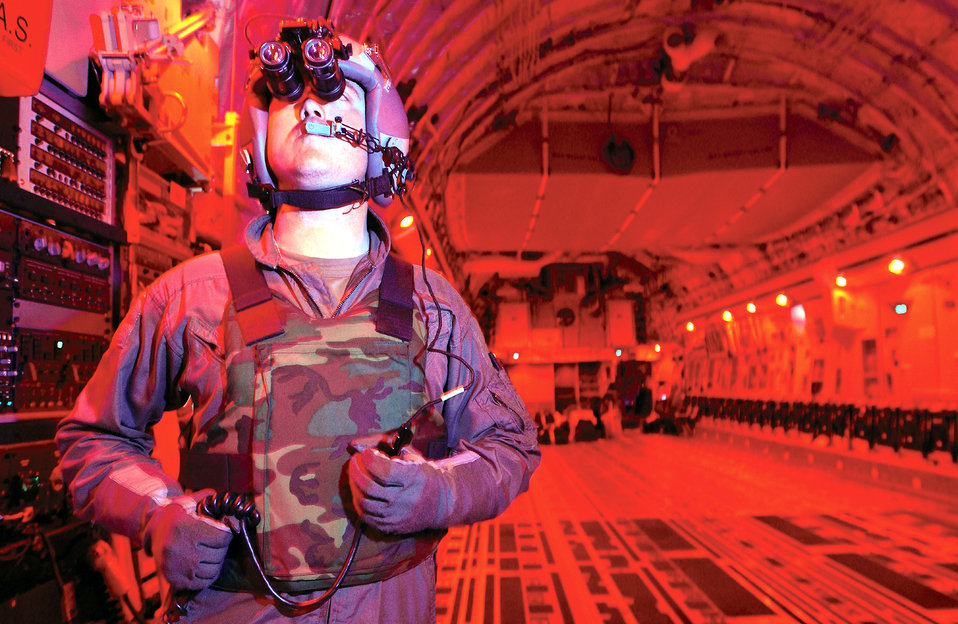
Keeping the supply line open

OPERATION ENDURING FREEDOM -- Staff Sgt. Michael, a C-17 loadmaster, from the 701st Airlift Squadron, Charleston Air Force Base, S.C., helps keep troops and supplies heading downrange for Operation Enduring Freedom.